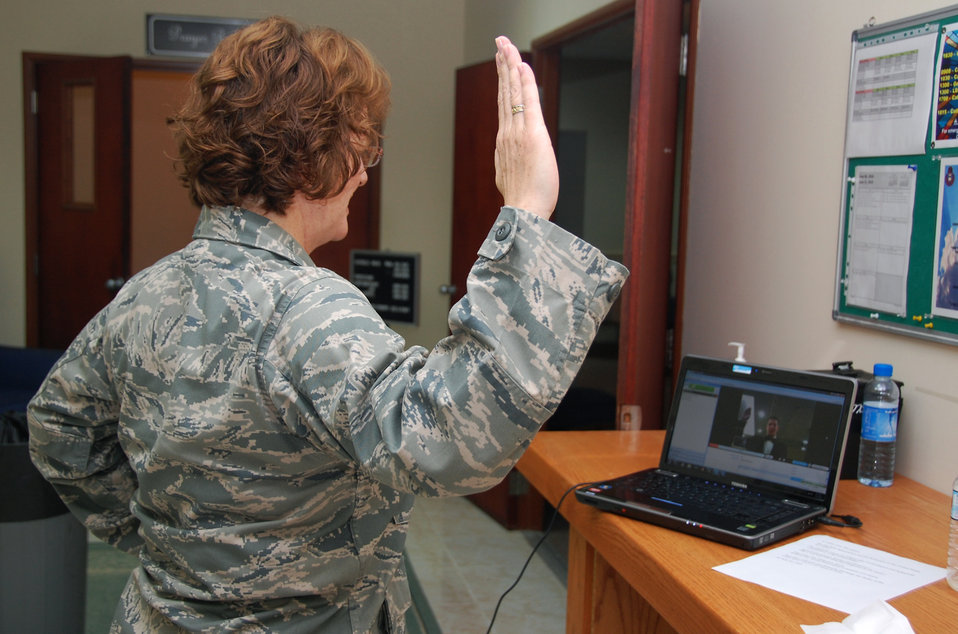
Mother commissions son

U.S. Air Force Lt. Col. Maureen Carroll swears her son, now-2nd Lt. Alek Krallman, into the Air Force June 13, 2010, in Southwest Asia, via the Internet during his Air Force ROTC graduation from Central Washington University in Ellensburg, Wash. Colonel Carroll is the 386th Expeditionary Maintenance Squadron commander.